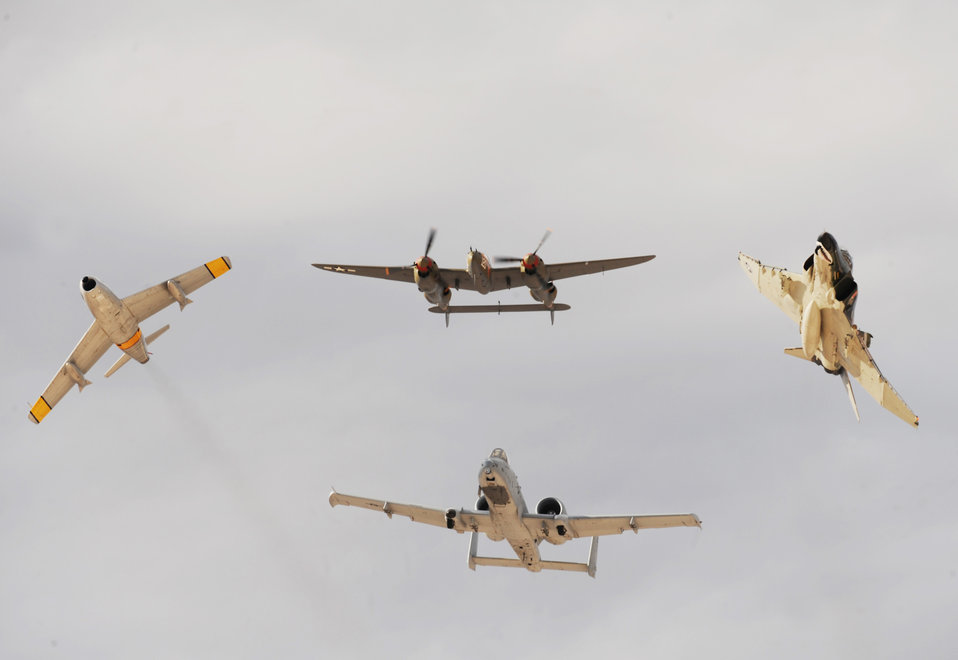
Thunderbirds close air show season

A F-86 Sabre, P-38 Lightning, F-4 Phantom and A-10 Thunderbolt (clockwise) break over Nellis Air Force Base, Nev., for the Air Combat Command heritage flight during the 2009 Aviation Nation open house Nov. 13, 2009. The open house is an opportunity for the Las Vegas community to view aerial demonstrations and static displays of various aircraft from the military. The open house also acts as the final air show of the year for the U.S. Air Force Aerial Demonstration Squadron Thunderbirds.